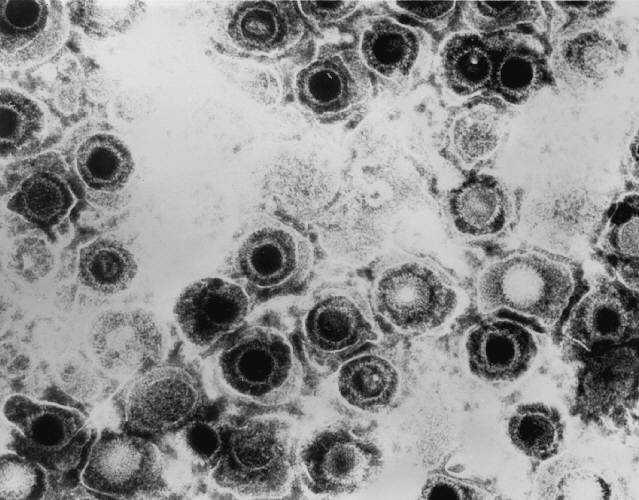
This transmission electron micrograph (TEM) depicted numbers of herpes simplex virions. Note that some of the nucleocapsids are empty, as shown by penetration of electron-dense stain.